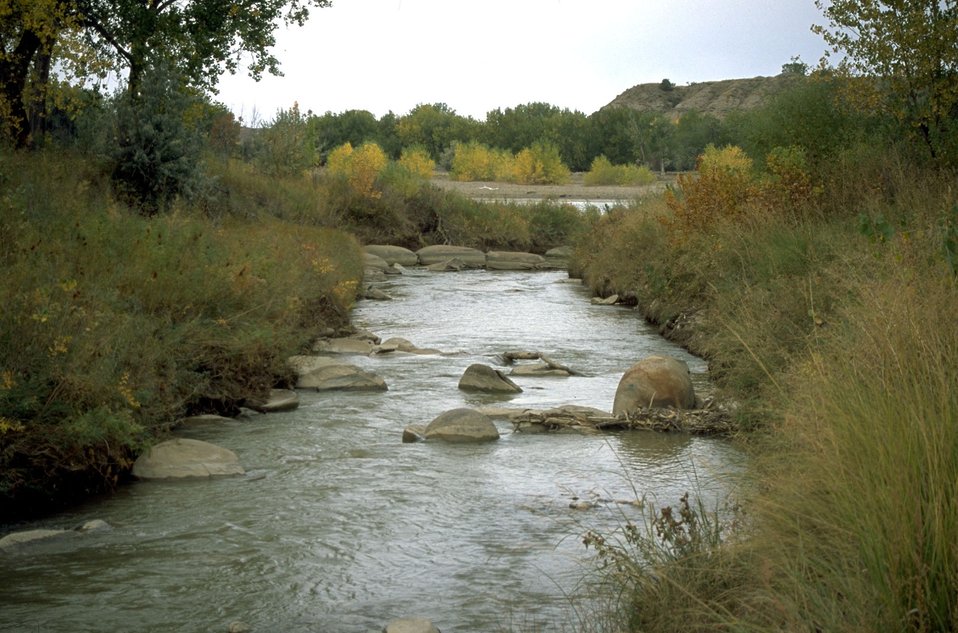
Jones Creek at Matthews Recreation Site